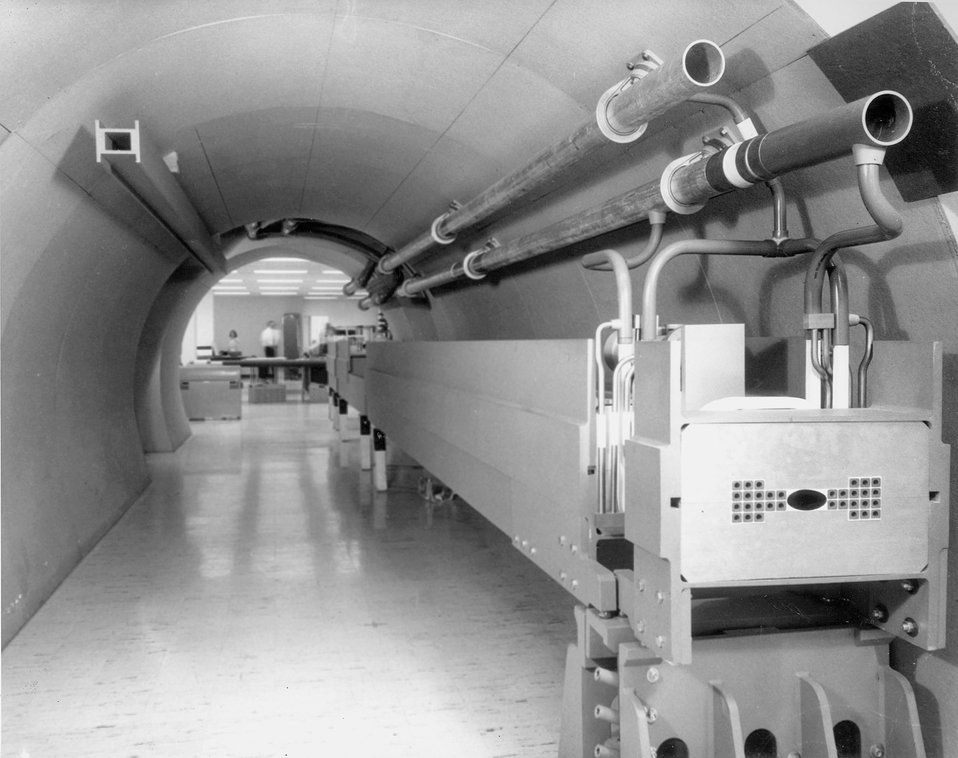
Scientists at the AEC NAL are making extensive use of prototype models in the construction of the giant 200 BeV particle accelerator. c.1969